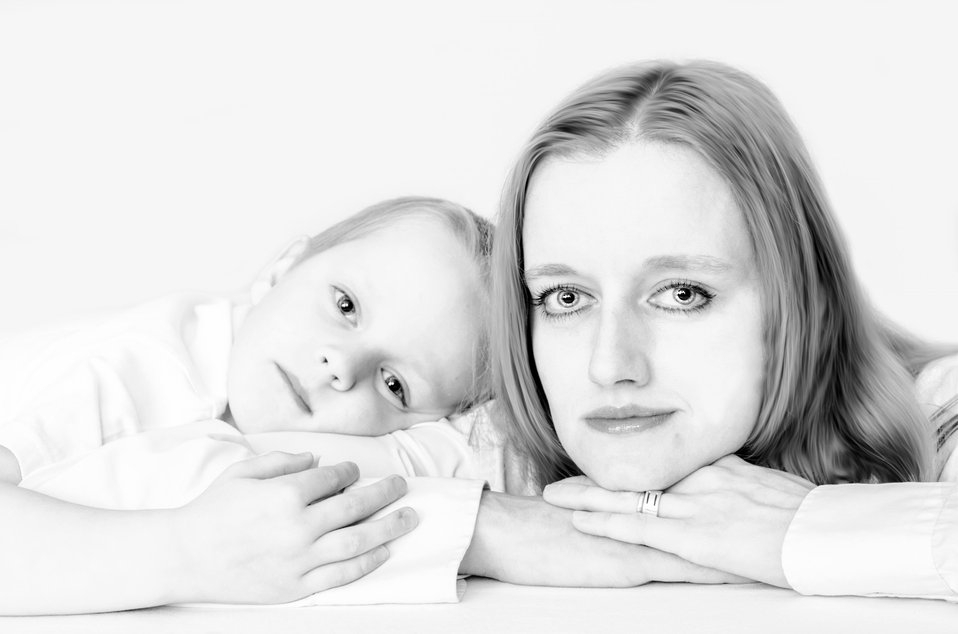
Mum and son black and white.